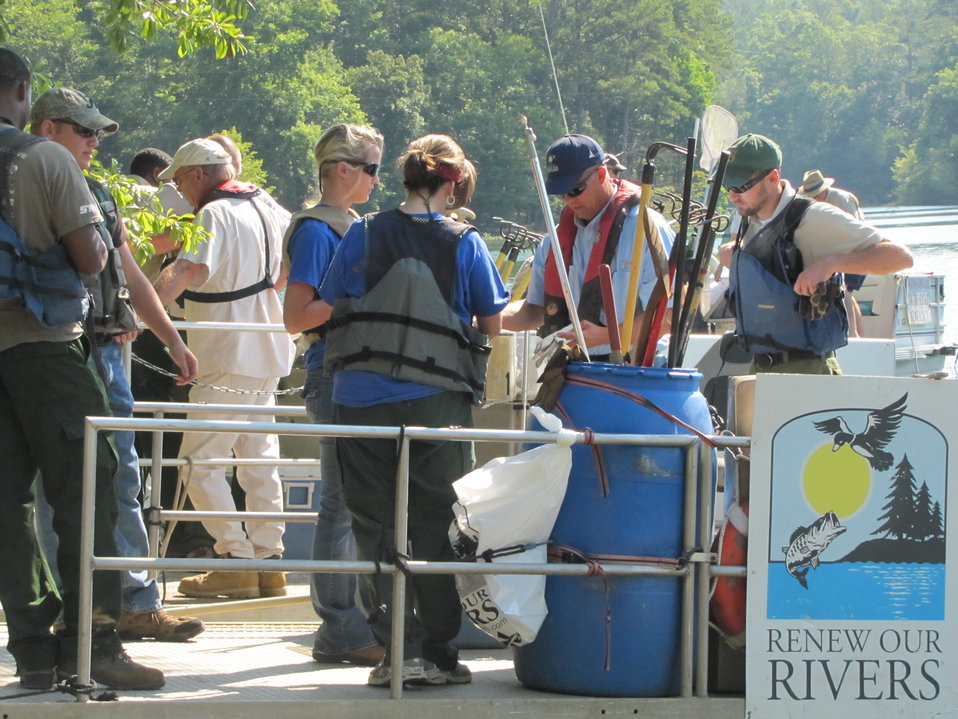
Staff and volunteers from Alabama Power Company, the Bankhead National Forest, and the Winston County Smith Lake Advocacy Group join forces in June 2012 at Houston Recreation Area to map out littered areas along Smith Lake that are only reachable by boats. Three barges and a bass boat were used to collect bottles, cans, rafts, fishing tackles, and small chunks of foam floating in the lake and along the shoreline. Volunteers donate their time each year to protect shorelines on the Bankhead National Forest in Double Springs, AL an effort greatly appreciated by the U.S. National Forest Service. The group and the Bankhead Ranger District were recently honored at a national ceremony in Washington, D.C., for their dedication to ensure that the water quality of Lewis Smith Lake is protected and preserved. Numerous volunteers and Forest Service employees received the U.S. Forest Service Rise to the Future award that is the agency’s highest honor for exemplary aquatic stewardship. U.S. Forest Service photo byTammy Truett.